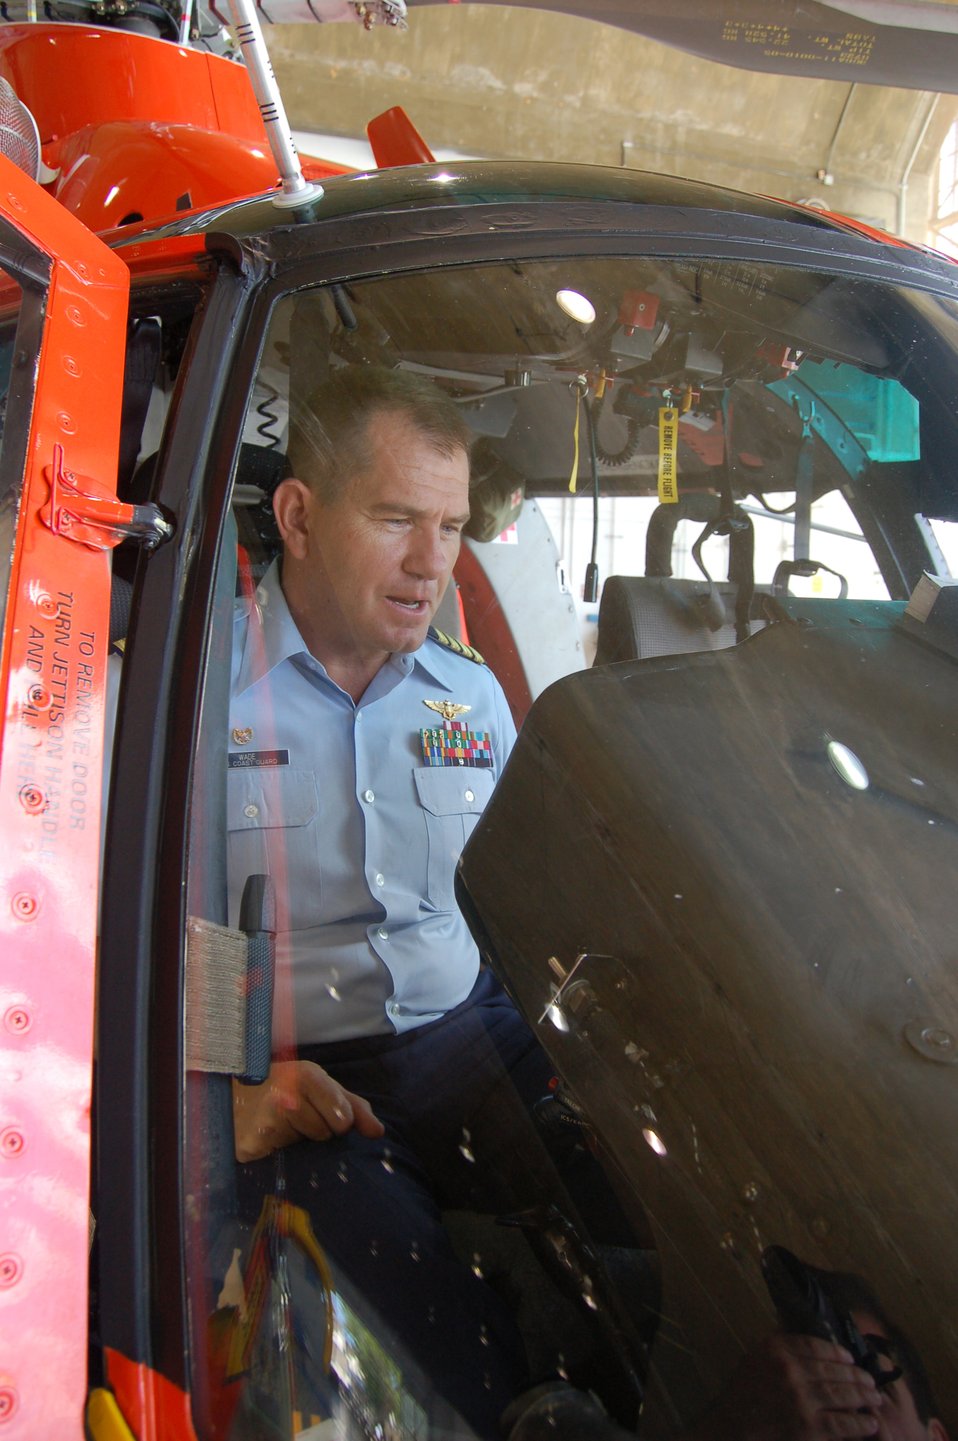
Blue uniforms continue command over Puerto Rico sky

Coast Guard Capt. Thomas Wade checks the readiness of an HH-65C Dolphin helicopter March 20 at Coast Guard Air Station Borinquen, Puerto Rico. Captain Thomas is the commanding officer of the air station. The Coast Guard provides a search and rescue capability for 1.2 million square miles around the Caribbean.